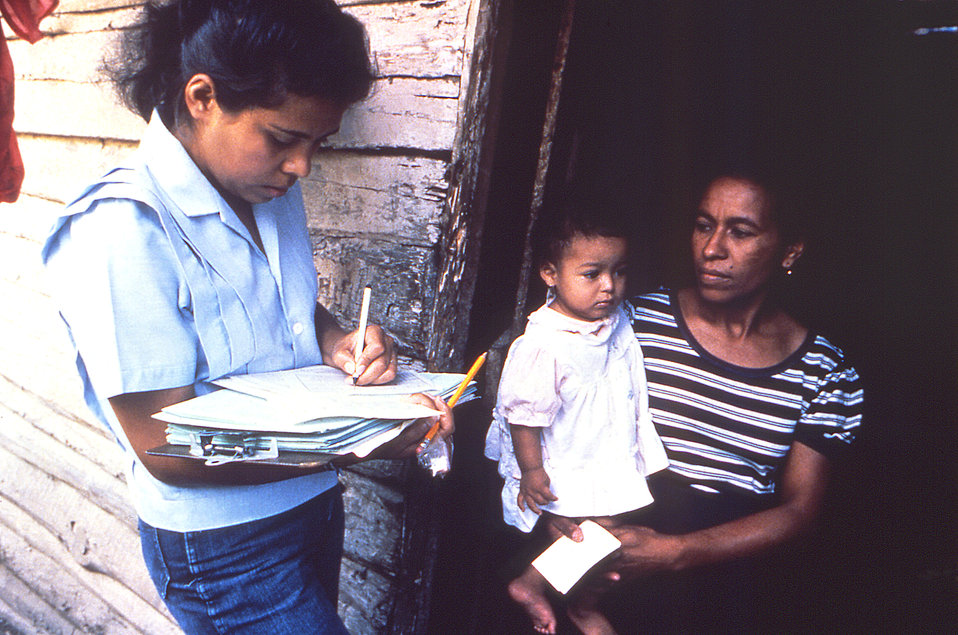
This 1989 image depicts a healthcare worker who was going door to door, conducting epidemiologically-related interviews in order to find out whether or not the appropriate polio vaccine had been administered to both the children, and adults of each visited household, in order to prevent them from acquiring poliomyelitis. If not, she would then administer the vaccine to those household members at home at the time, and return to vaccinate any remaining members.